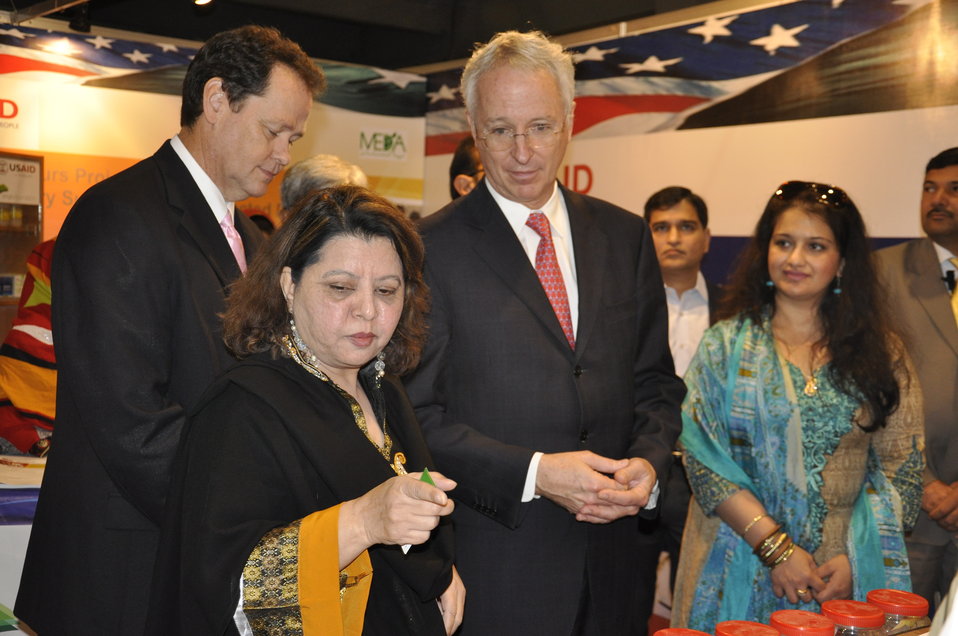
Ambassador Cameron Munter taking interest in the Medicinal and Aromatic Plants at the Entrepreneurs project stall